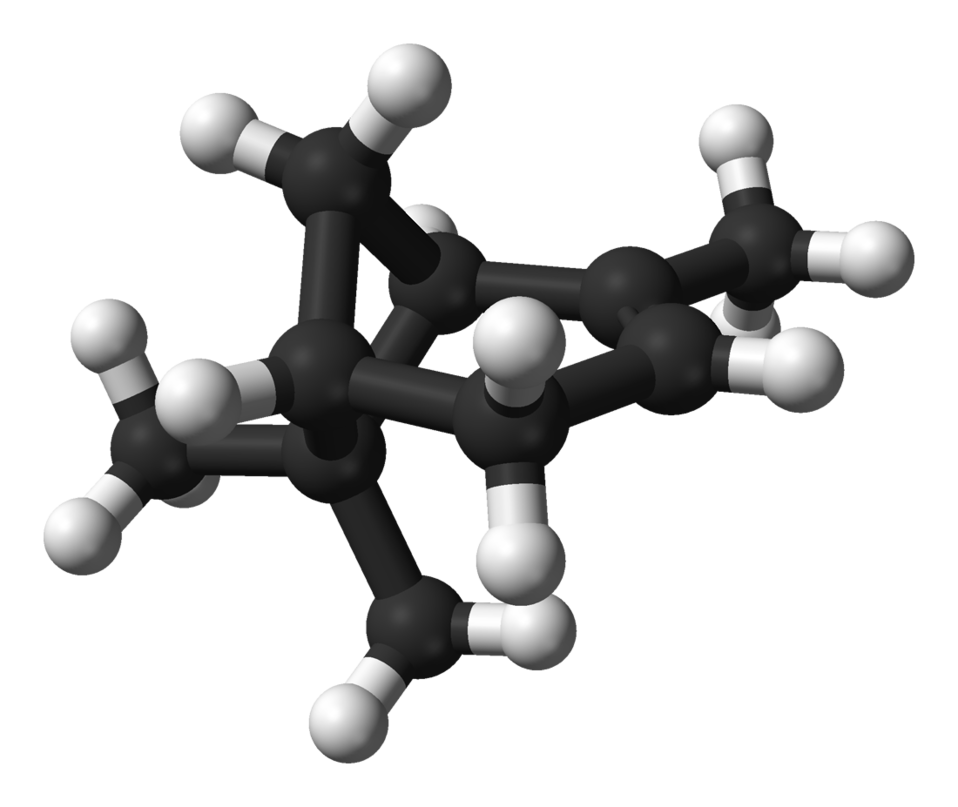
Ball-and-stick model of the (1S)-(−)-α-pinene molecule, C10H16. X-ray crystallographic data from A. D. Bond and J. E. Davies (November 2001). '(1S)-(−)-α-Pinene'. Acta Cryst. 'E57' (11): o1039-o1040. DOI:10.1107/S1600536801016415. Image generated in Accelrys DS Visualizer.